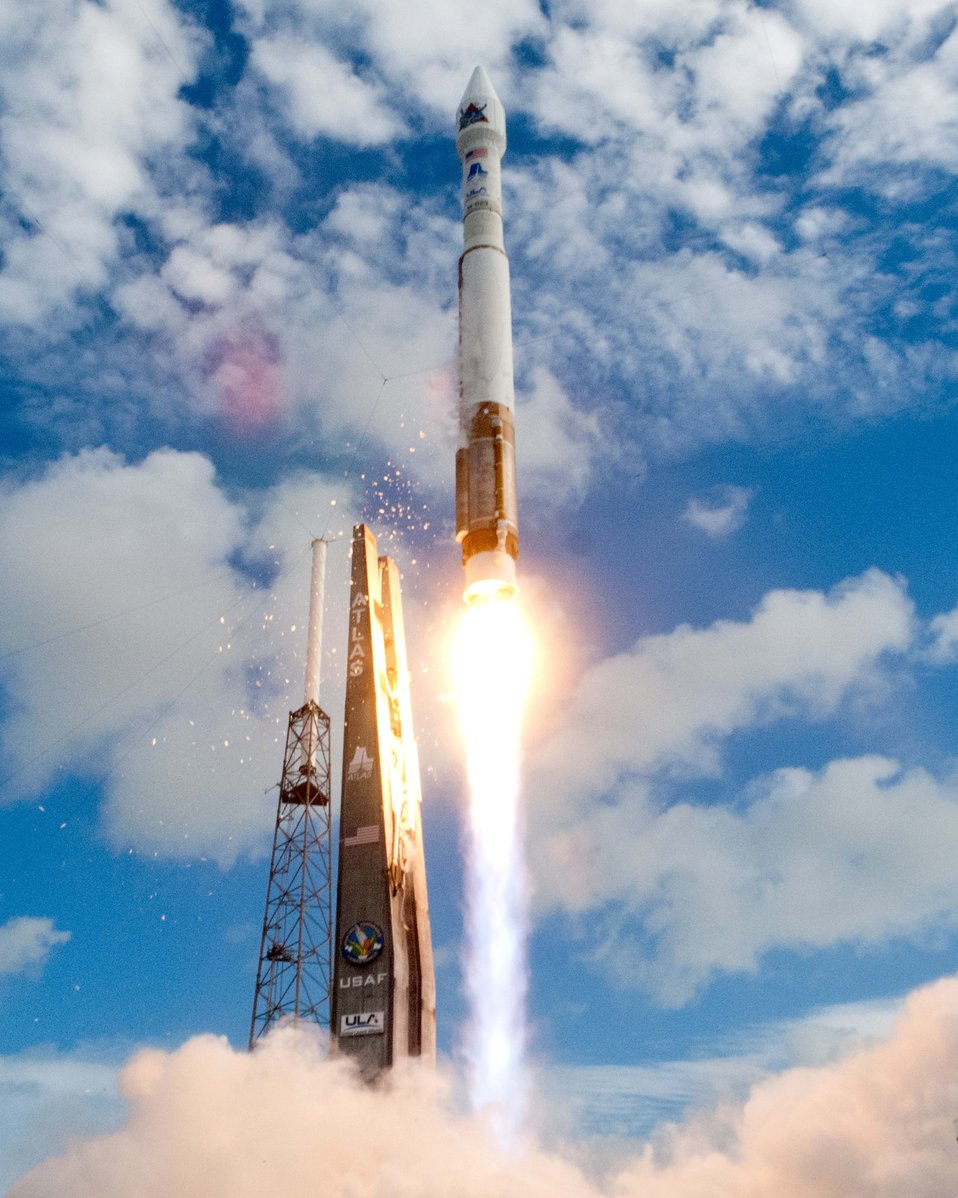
Liftoff marks the 50th Evolved Expendable Launch Vehicle mission

A United Launch Alliance Atlas V rocket blasts off from Cape Canaveral Air Force Station, Fla., June 20, 2012, with a national security payload for the National Reconnaissance Office. This is the 61st launch for ULA and marks the 50th successful launch of an Atlas V and Delta IV Evolved Expendable Launch Vehicle.